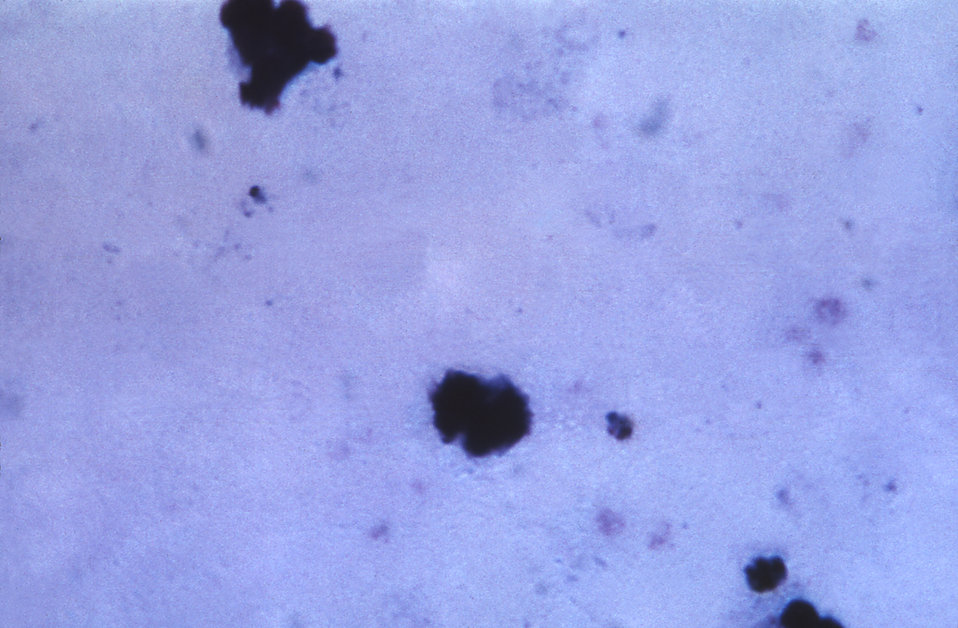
This thick film photomicrograph depicts two young, growing Plasmodium malariae trophozoites.